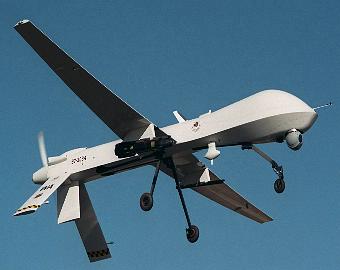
Dec. 17 airpower summary: Predators strike enemy forces

An MQ-1 Predator unmanned aerial vehicle is armed with an AGM-114 Hellfire missile. The Predator's primary mission is interdiction and conducting armed reconnaissance against critical, perishable targets.